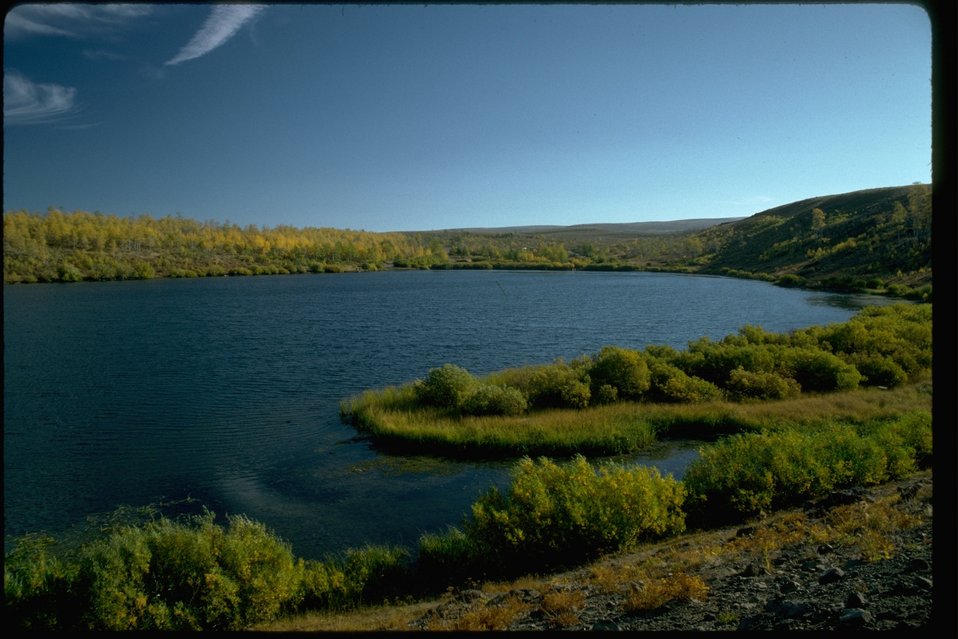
Fish Lake from Southwest Steens Mountain, Oregon.